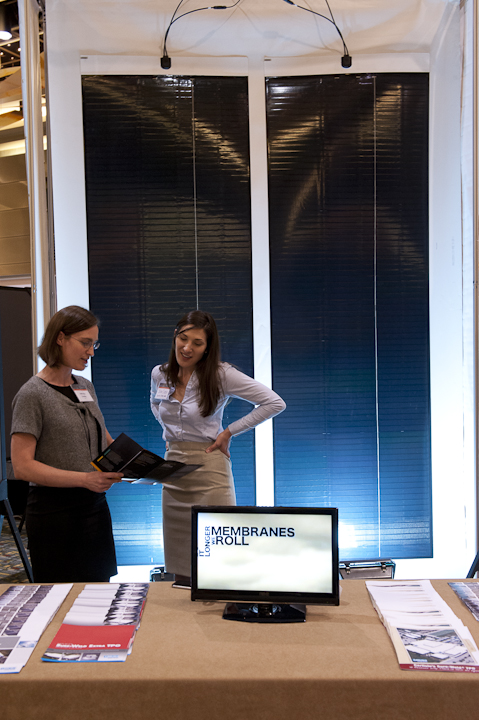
SunShot Tech

June 13, 2012- Julie Sitch, right, shows her product to Katherine Crowley, left at the Technology Forum at the SunShot Grand Challenge Summit and Technology Forum in Denver, Colorado.